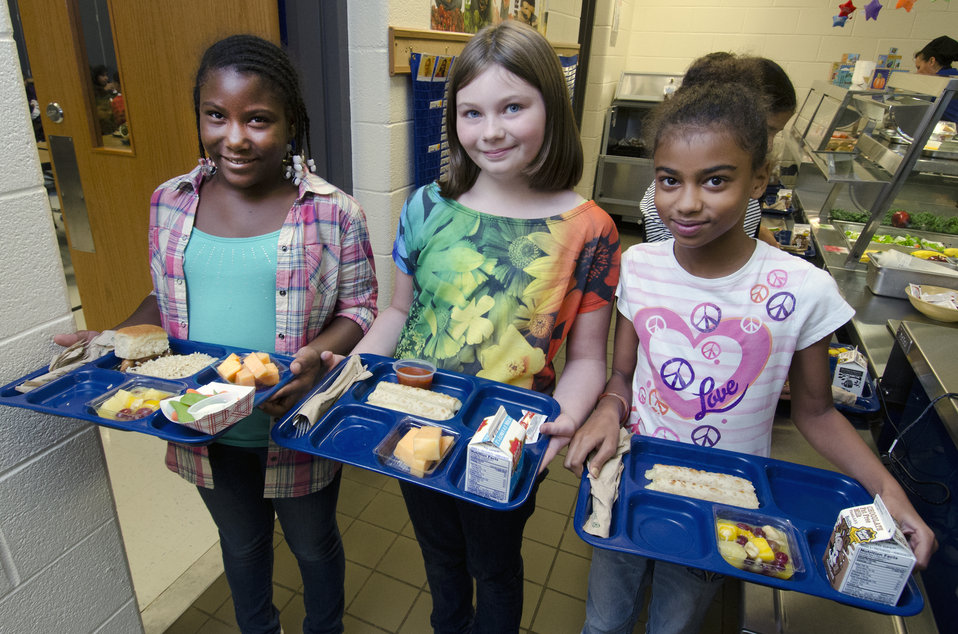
School lunch staff and students enjoy the new school lunch menu created to meet the new standards at the Yorkshire Elementary School in Manassas, VA on Friday, Sept. 7, 2012.